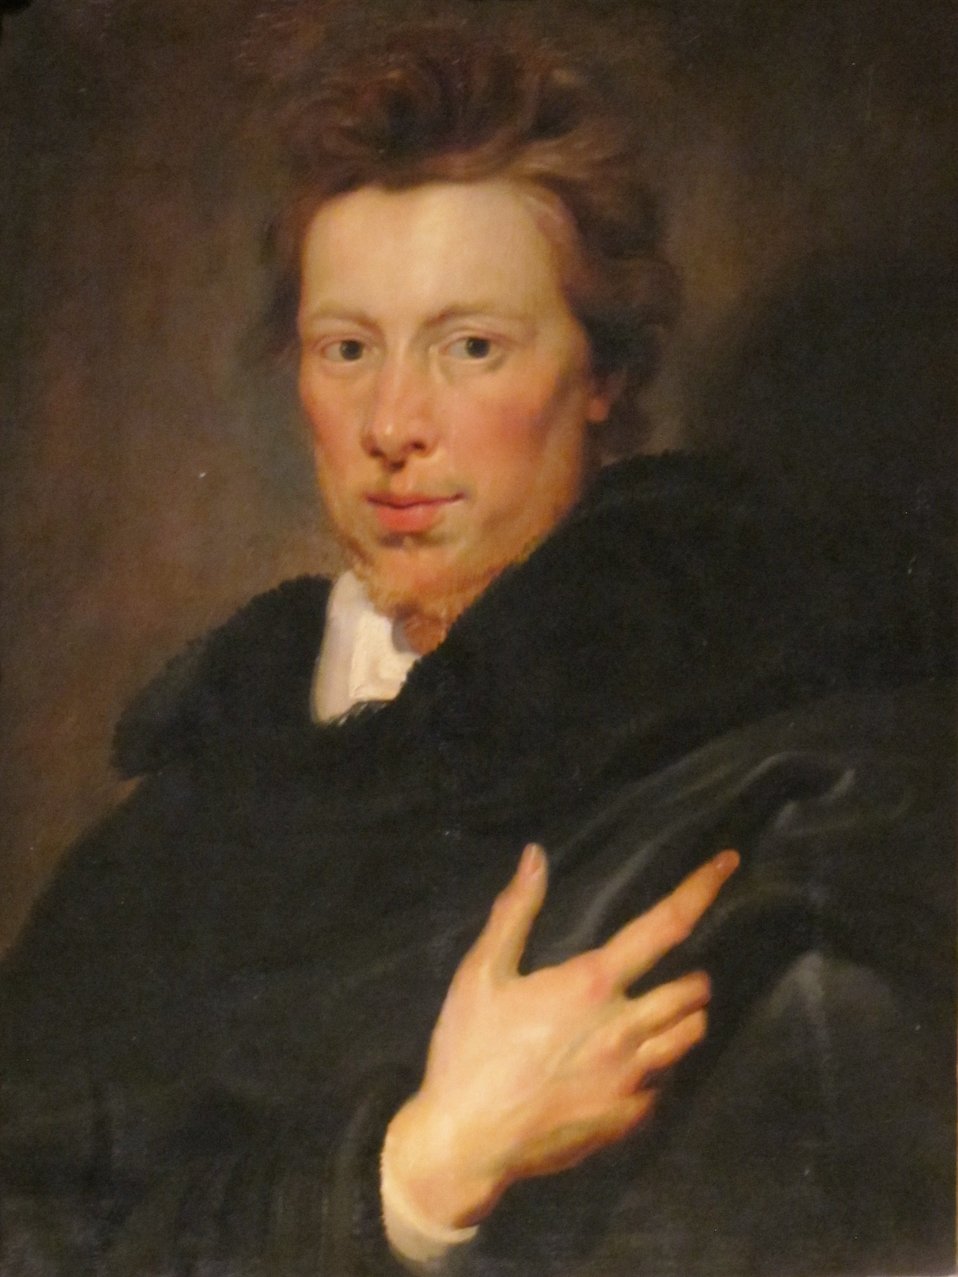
Portrait of Daniel Nijs, oil on oak panel painting by Peter Paul Rubens, c. 1612-15, Dayton Art Institute